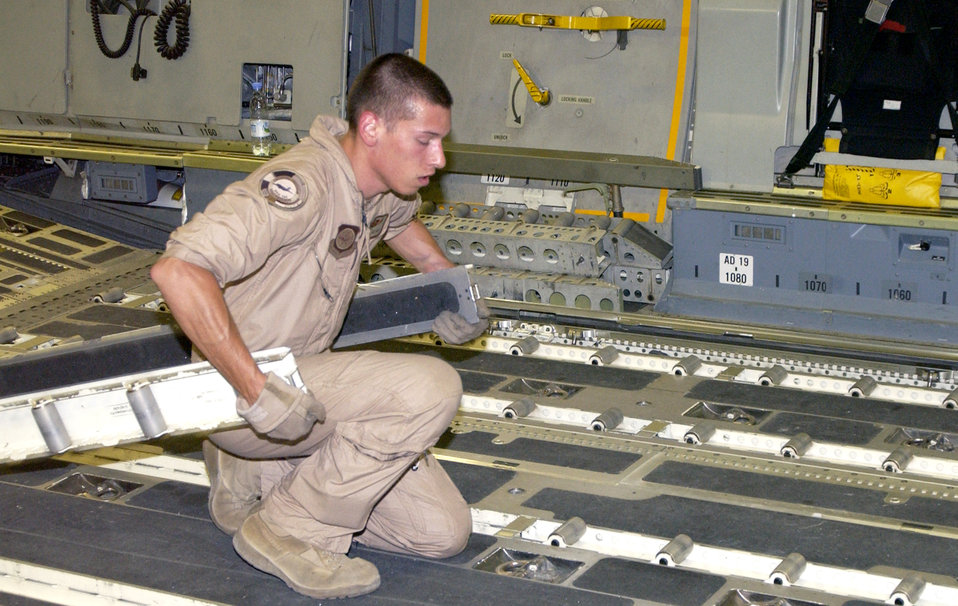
C-17 Globemaster III crew doing its part

Airman 1st Class Darrick Maloney prepares the cargo floor for a full load of pallets destined for Balad Air Base, Iraq, on Aug. 5. Airman Maloney is a C-17 Globemaster III loadmaster with the 816th Expeditionary Airlift Squadron.